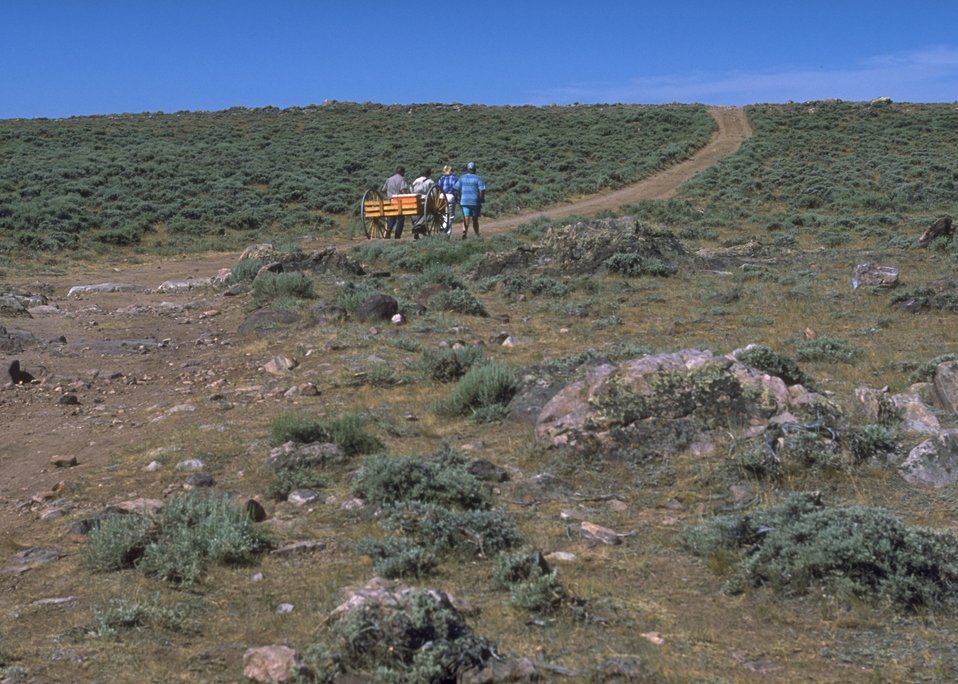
Hand cart re-enactment along the Mormon Trail, Lander Field Office.